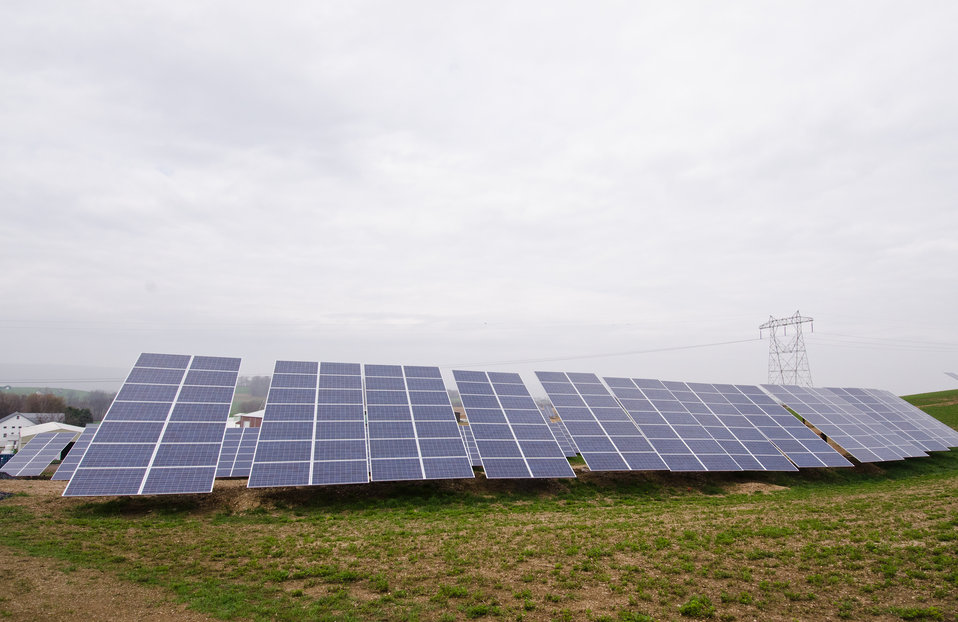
Heidel Hollow Farms, on Wednesday, April 20, 2011, has been a family owned farm since 1852 and is currently an 1,800 acre operation in Germansville, PA. Led by David Fink, President of Heidel Hollow Farms, they mainly produce and compact hay for exportand grow produce on 300 acres for local. With the financial help of the U.S. Department of Agriculture (USDA) an 896 panel solar array was recently installed on non farmable diversion ditches. Rated at 200 kilowatts, they project 240 megawatts of electricity to be produced each year, providing up to 70% of the farms electrical needs. Additionally, USDA financial assistance made it possible to replace the hay compactor’s diesel engines with clean low-maintenance, low operating cost electric motors to power the compactor's hydraulic system. The compactor increases the density of baled hay by two and half times for more efficient shipping to overseas customers.